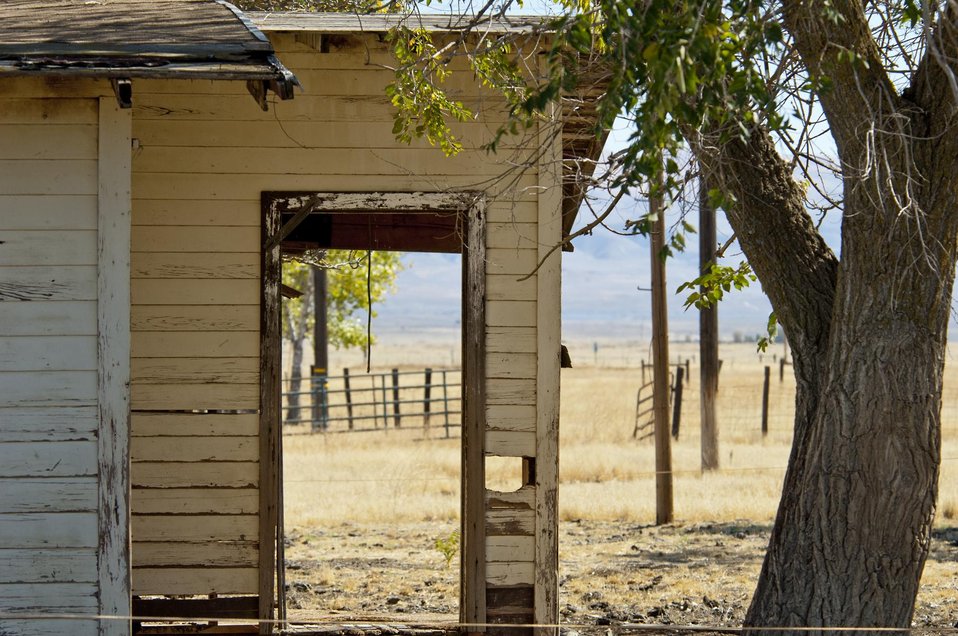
Home on the Range, Carrizo Plain